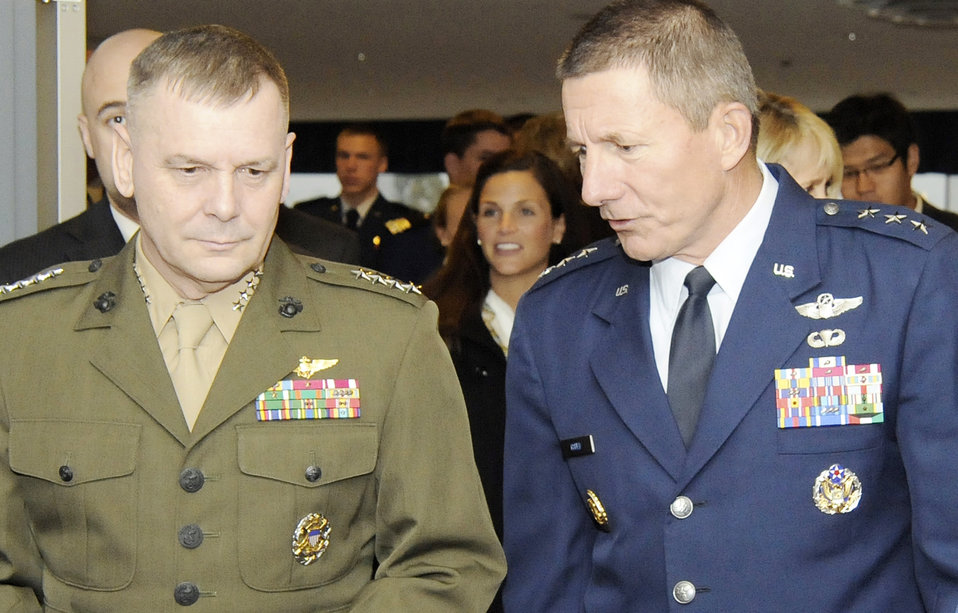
Academy Assembly guests discuss bridging war, peace

Marine Gen. James Cartwright talks with Lt. Gen. Michael Gould before the Academy Assembly keynote speech at the Air Force Academy's Arnold Hall Theater Oct. 8, 2009. The theme for the 2009 Academy Assembly was